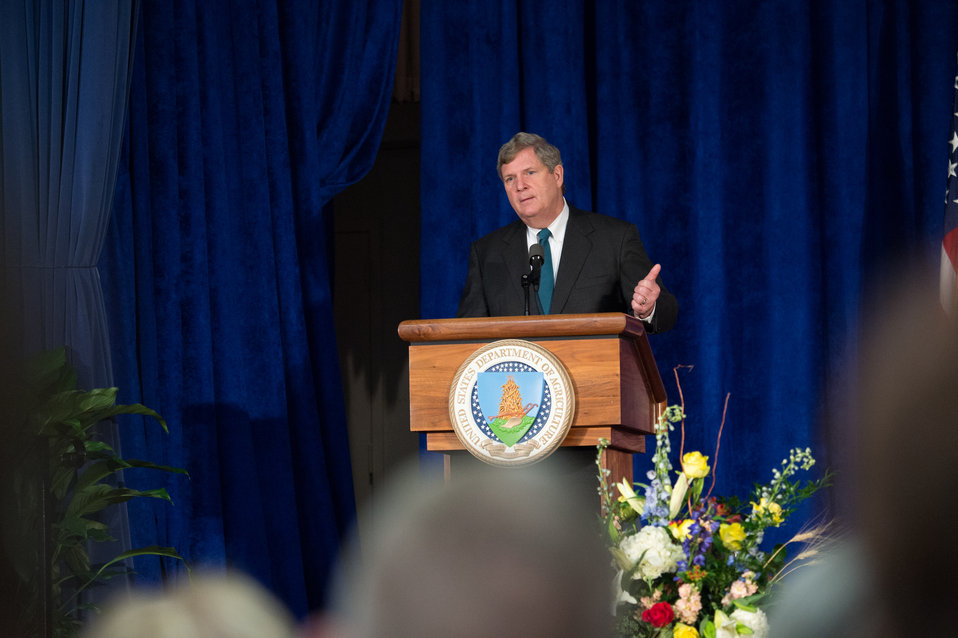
Agriculture Secretary Tom Vilsack speaks at the 65th Annual Secretary’s Honor Awards “Serving A Modern Innovative and Inspiring Rural America” in the Jefferson Auditorium at the U.S. Department of Agriculture (USDA) in Washington, D.C. on Wednesday, Dec. 11, 2013.